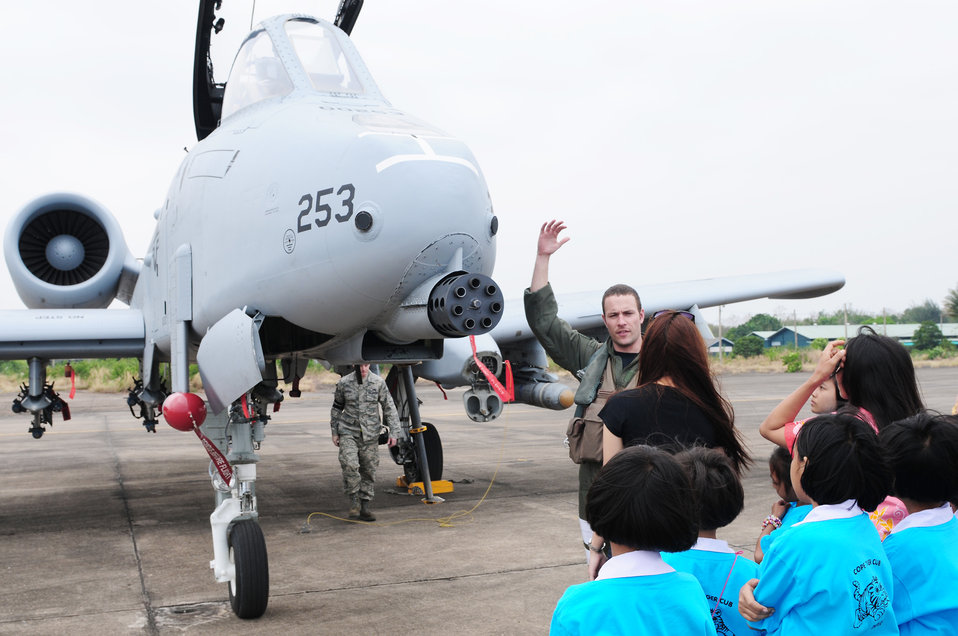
Thai students visit air force base

Capt. Joel Bernazzani talks about the A-10 Thunderbolt II during the Cope Tiger open house held for more than 50 Thai students March 10, 2010, at Udon Thani Royal Thai Air Force Base, Thailand. Captain Bernazzani is a pilot from the 25th Fighter Squadron at Osan Air Base, South Korea.